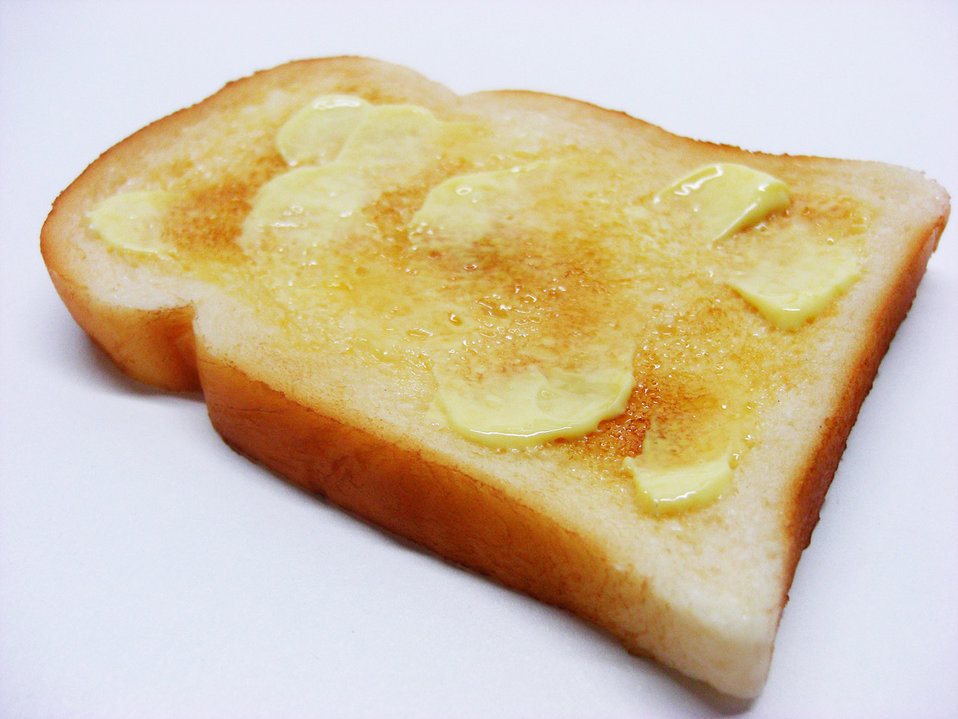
Buttered toast.